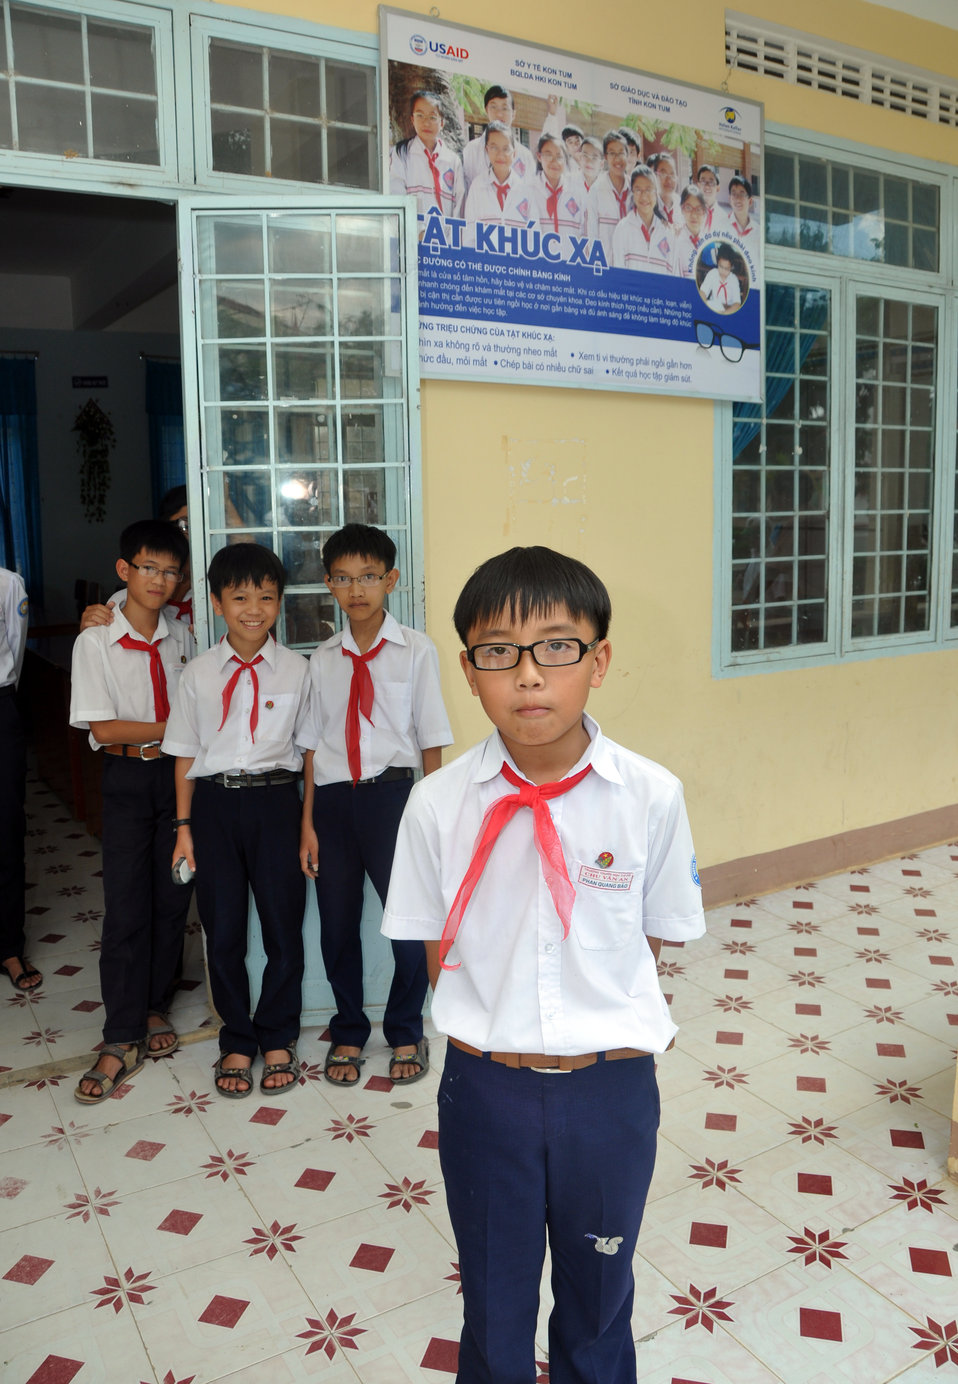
USAID and partners support eyecare, glasses, in Kon Tum

Eyeglasses examination at Luong The Vinh School, Kon Tum Province